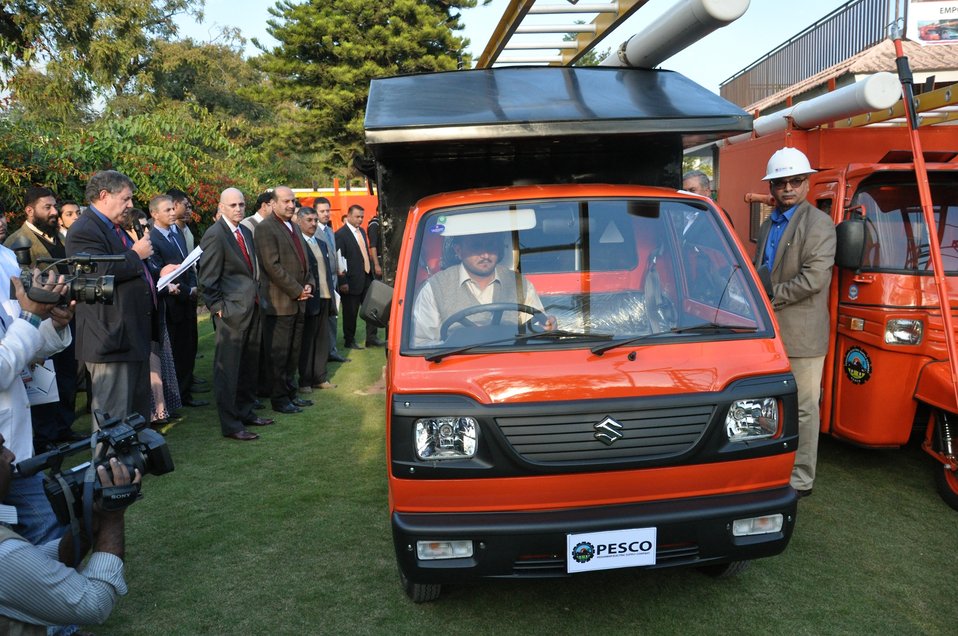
Test Drive